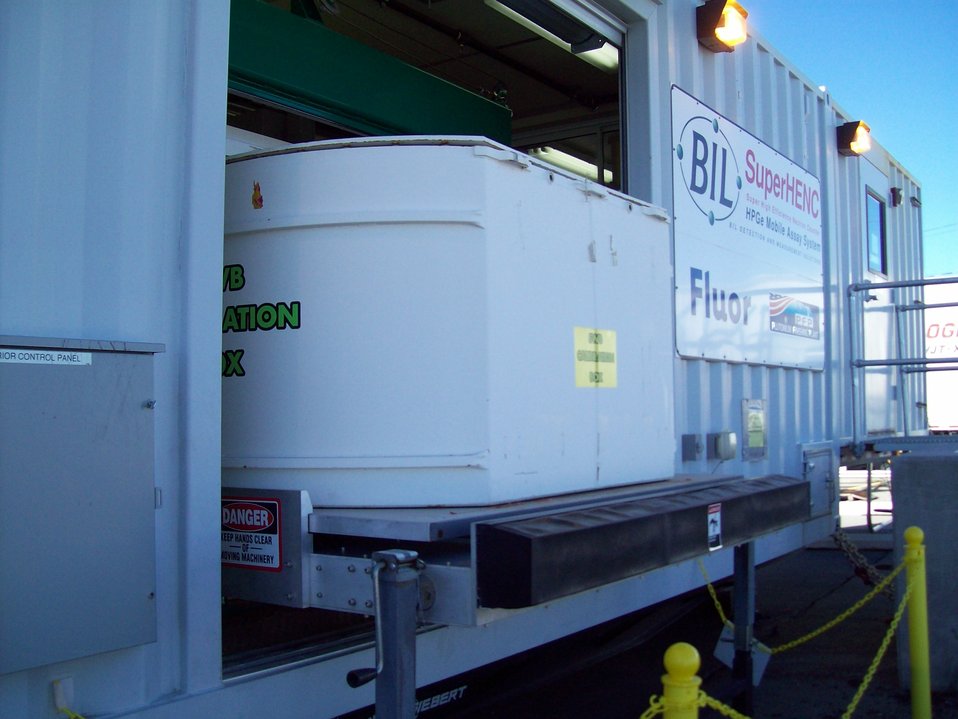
New equipment at LANL

On October 28, 2011, the Environmental Protection Agency approved the Department of Energy’s request to use new equipment at the Los Alamos National Laboratory (LANL) in Los Alamos, N.M. for examining transuranic (TRU) waste to ensure prohibited items such as aerosol containers are not in waste shipped to WIPP.

The new equipment is called a super high efficiency neutron counter (SuperHENC) and has higher fidelity to “x-ray” contact-handled TRU (CH-TRU) waste boxes. Like the Transportation Safety Administration screening for prohibited items on planes, EM screens for items that are not allowed in waste going to WIPP due to the potential hazards (physical, chemical, and nuclear characteristics) primarily associated with transporting the wastes to WIPP.

Prior to having the SuperHENC, waste packages were opened and sorted by hand to ensure no prohibited items were in the waste or waste containers. Now with SuperHENC fewer waste containers will need to be opened and sorted by hand, thereby reducing potential worker exposure and increasing the efficiency of the sorting processes.